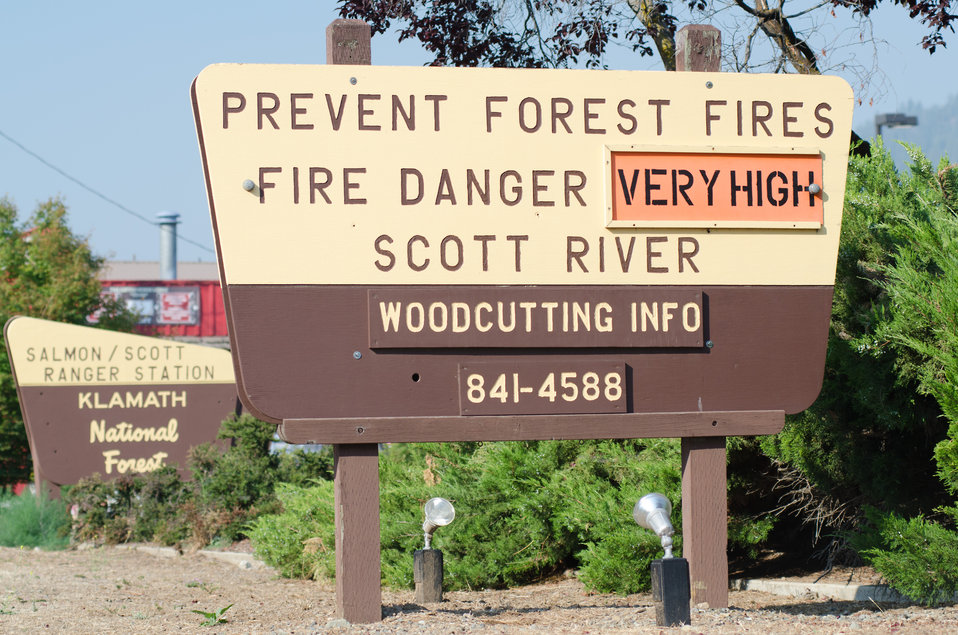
Salmon/Scott Ranger Station, of the Klamath National Forest, site of the Salmon River Complex Wildlands Fire, northwest of Sawyers Bar and west of Etna and Yreka, CA, on Wednesday, Aug. 6, 2013.